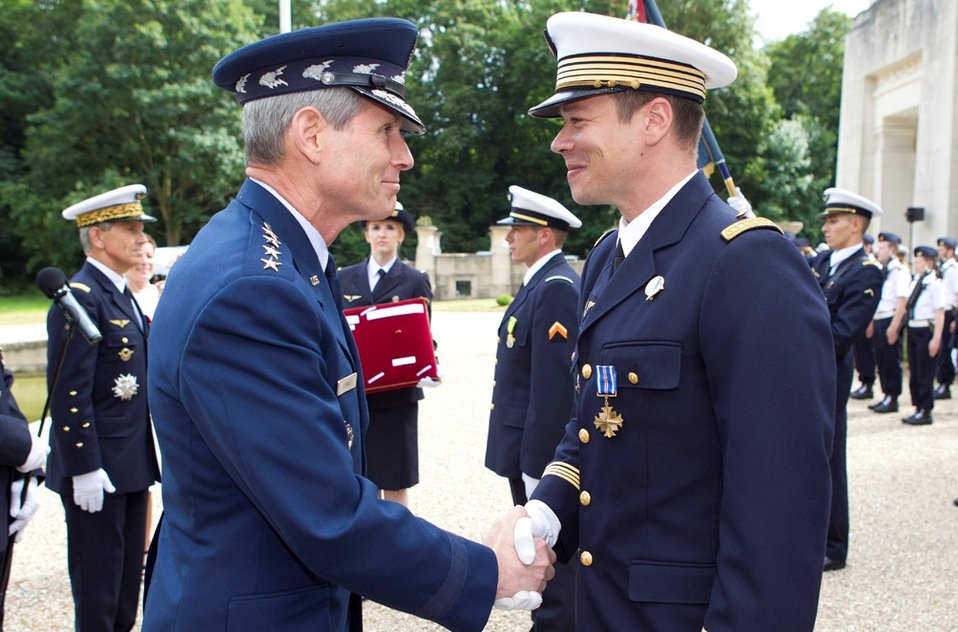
Honoring a hero

Air Force Chief of Staff Gen. Norton Schwartz congratulates French air force Maj. Guillaume Vernet after presenting him with the Distinguished Flying Cross with Valor July 13, 2011, at the Lafayette Escadrille Memorial in Marnes-la-Coquette, France. Vernet was awarded the decoration for repeatedly flying into hostile territory in December 2009 while deployed to Afghanistan as an exchange officer with the 41st Rescue Squadron from Moody Air Force Base, Ga. During that mission, Vernet rescued an urgent casualty whose injury put the lives of 160 British soldiers in jeopardy.